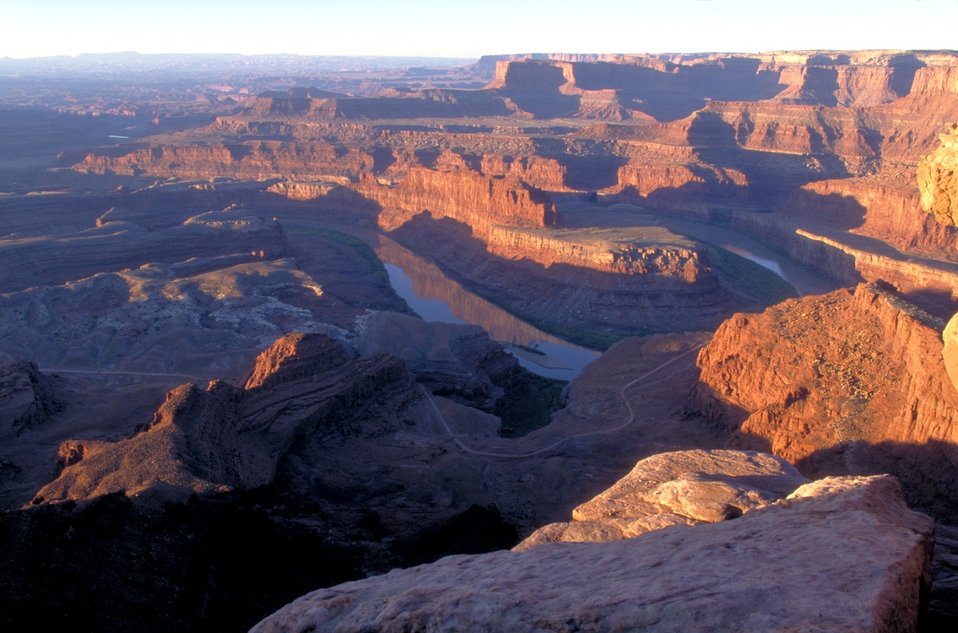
View of Colorado River from Deadhorse Point State Park.